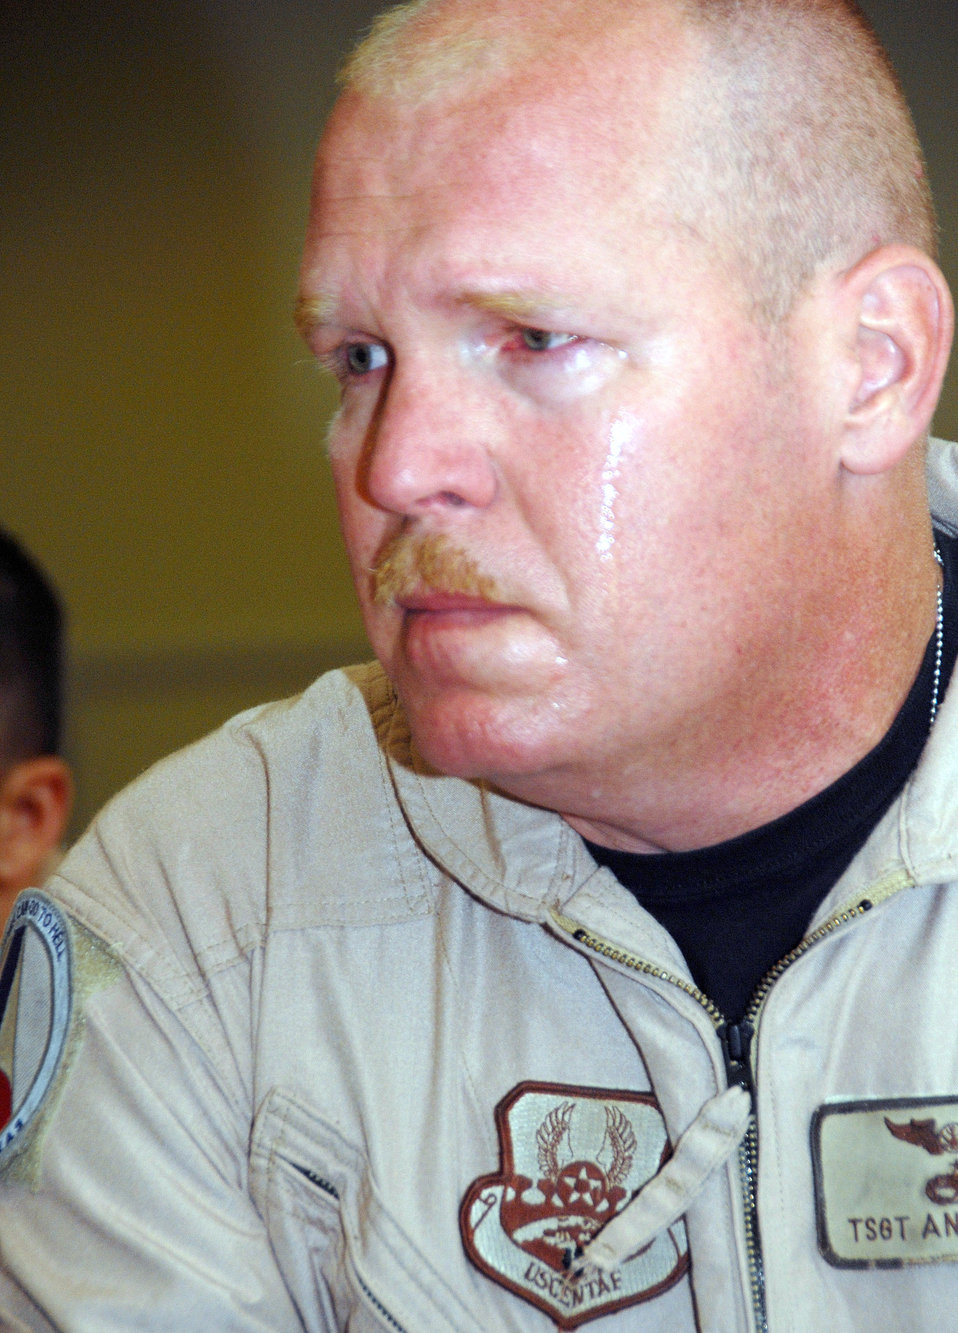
The passing of a friend

Tech. Sgt. Andy Pitts grieves Aug. 7 for Tech. Sgt. Joey Link during a memorial service at a base in Southwest Asia. Sergeant Link was a flight engineer with the 746th Expeditionary Airlift Squadron and died of natural causes.